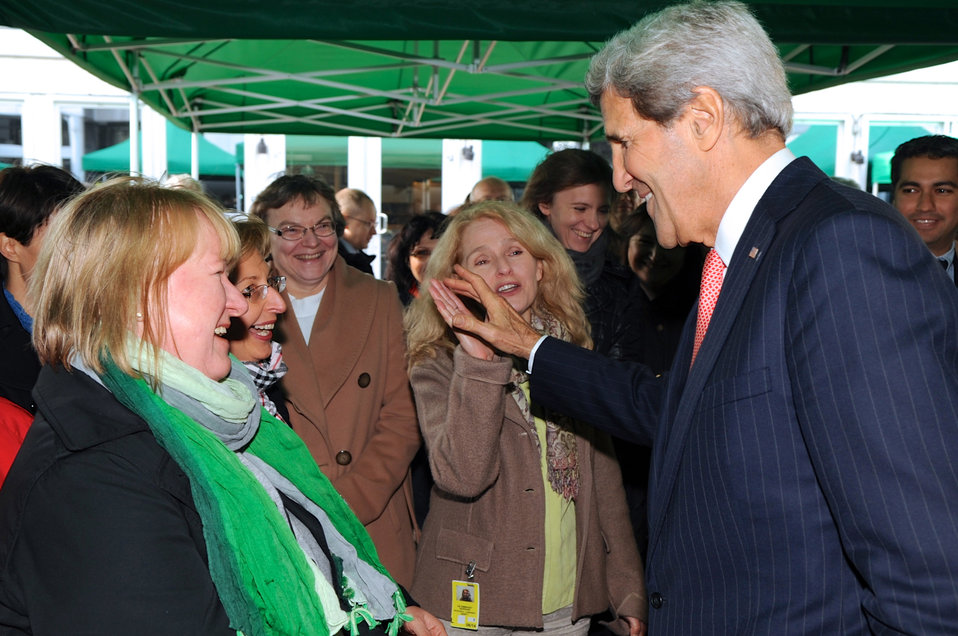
Secretary Kerry Greets Embassy Warsaw Employees

U.S. Secretary of State John Kerry exchanges a high five with a staff member at the U.S. Embassy in Warsaw, Poland, on on November 5, 2013.